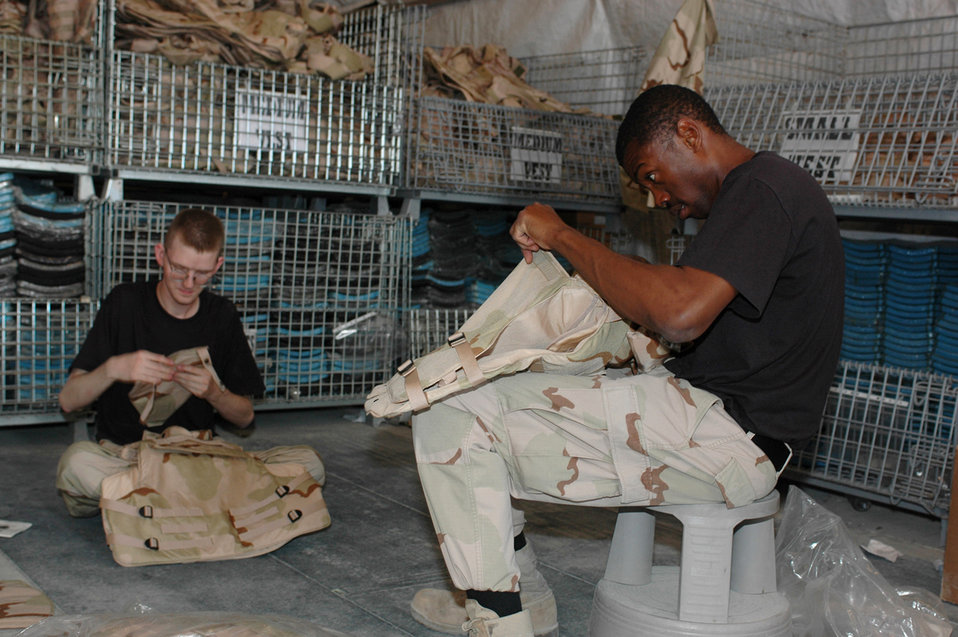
Team preps servicemembers heading to forward locations

Senior Airman Christopher Graham (left) and Staff Sgt. Abram Norwood and build up individual body armor vests May 15. The Airmen are mobility specialists assigned to the 379th Expeditionary Logistics Readiness Squadron's Expeditionary Theater Distribution Center.